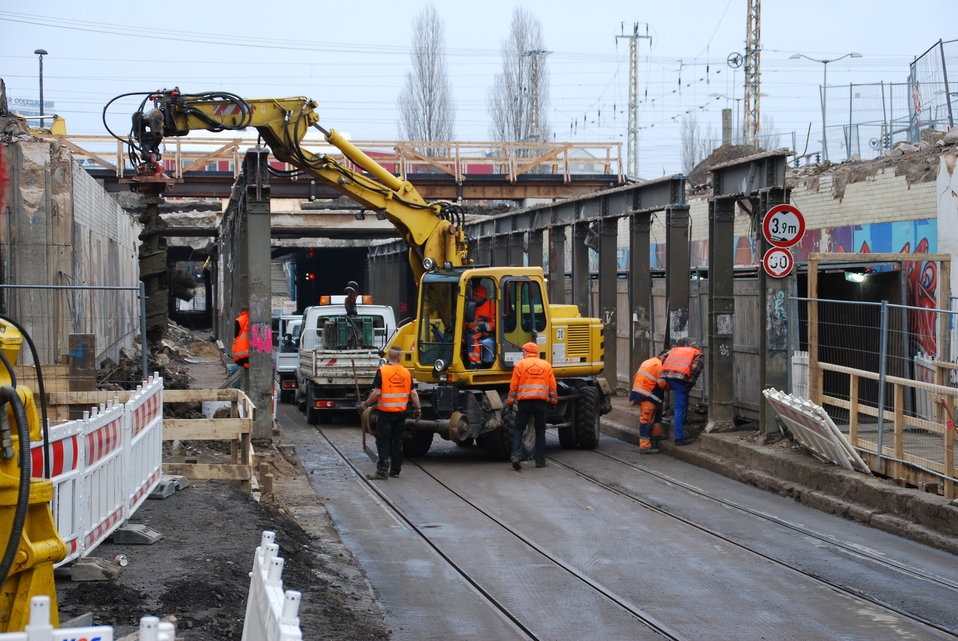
Abriss Bahnhofstunnel Frankfurt (Oder)